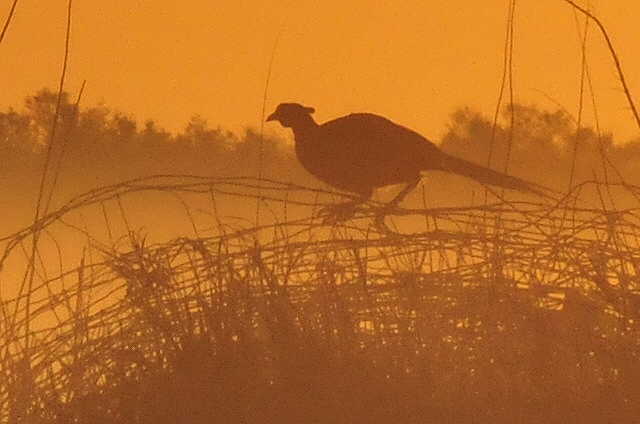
Rooster pheasant at sunrise Sand Lake WMD